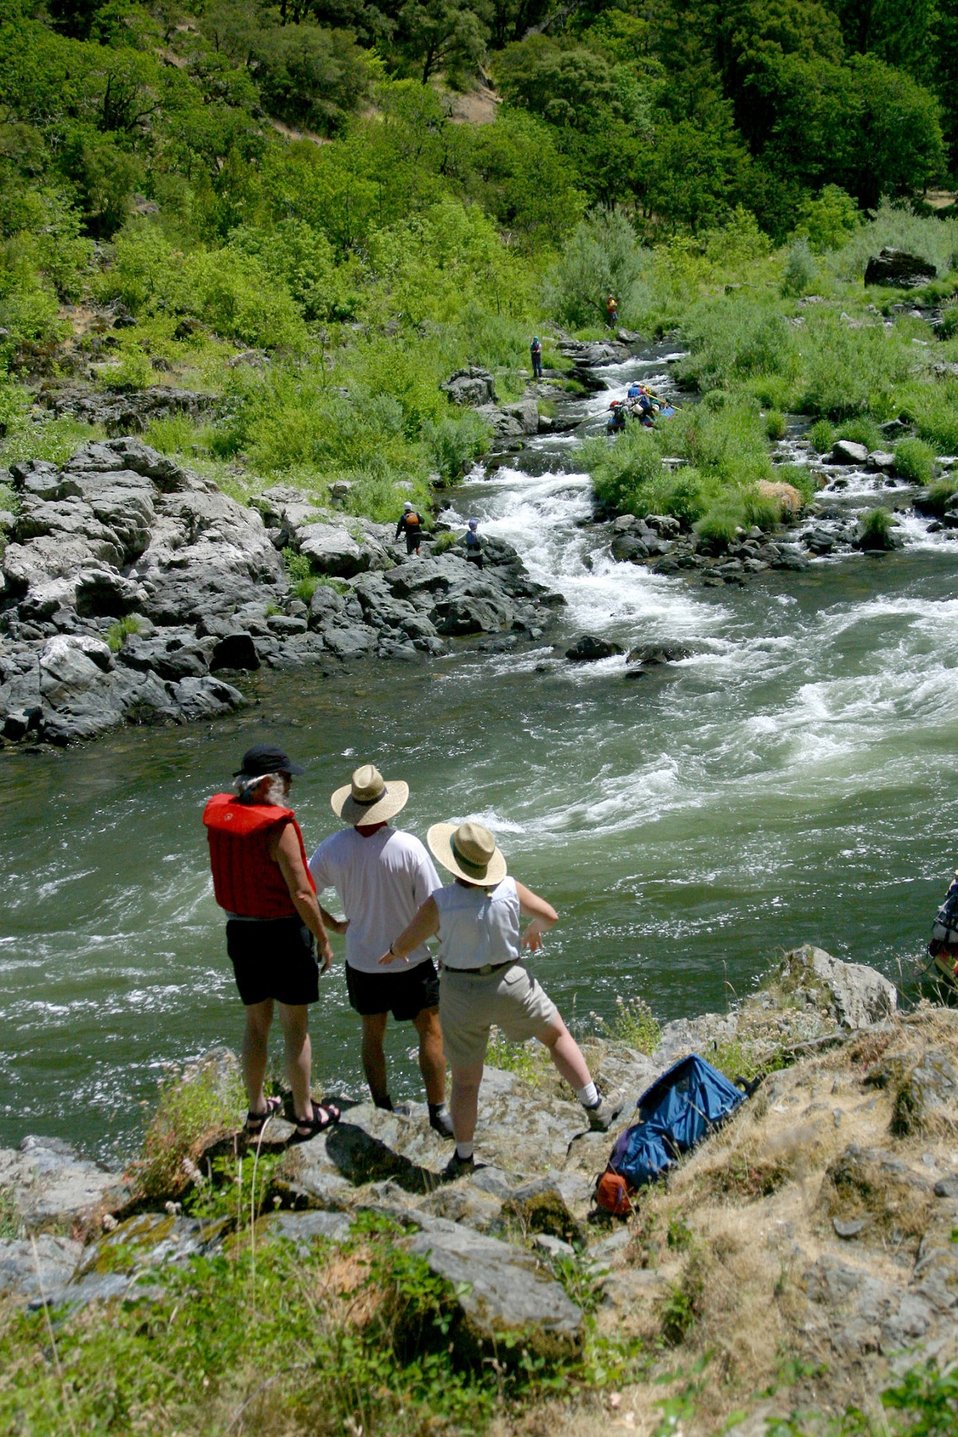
Rainie Falls Fish Ladder